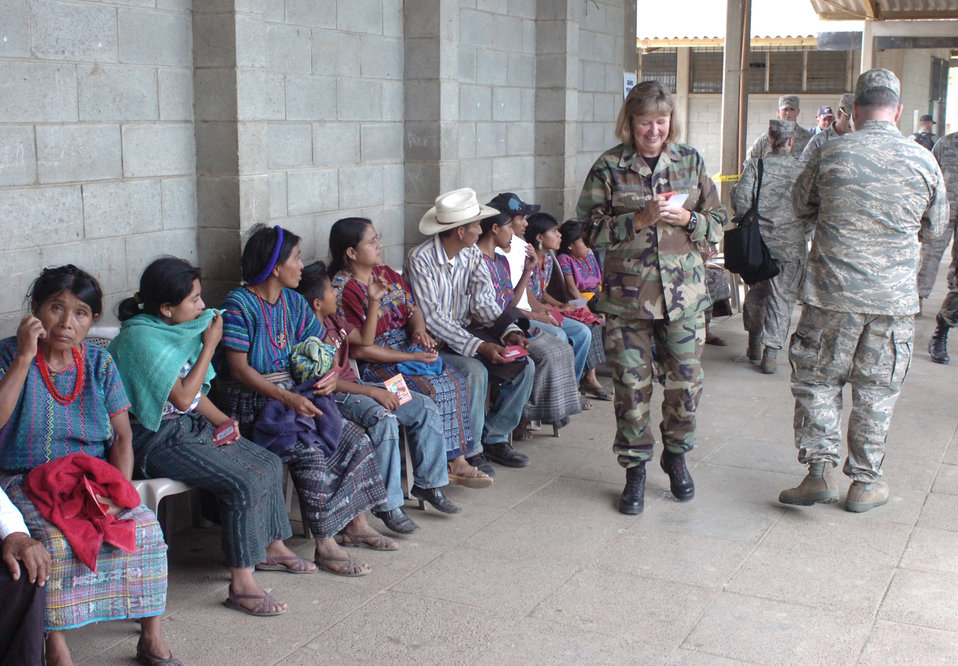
Air Guard delivers medical care to Guatemala

Guatemalans wait for their turn to be seen by U.S. medical professionals during a 15-day medical exercise that provides medical care to people in remote areas and a training opportunity for medical Airmen of the Arkansas Air National Guard.